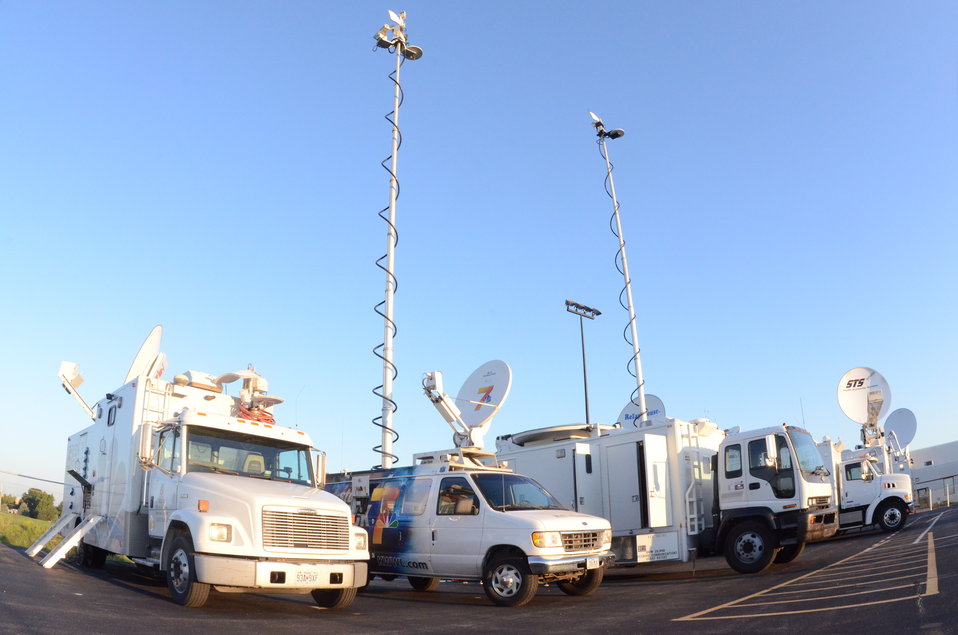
Satellite press trucks on the campus at the Northeast Iowa Community College for the White House Rural Economic Forum held on Tuesday, Aug. 16, 2011.